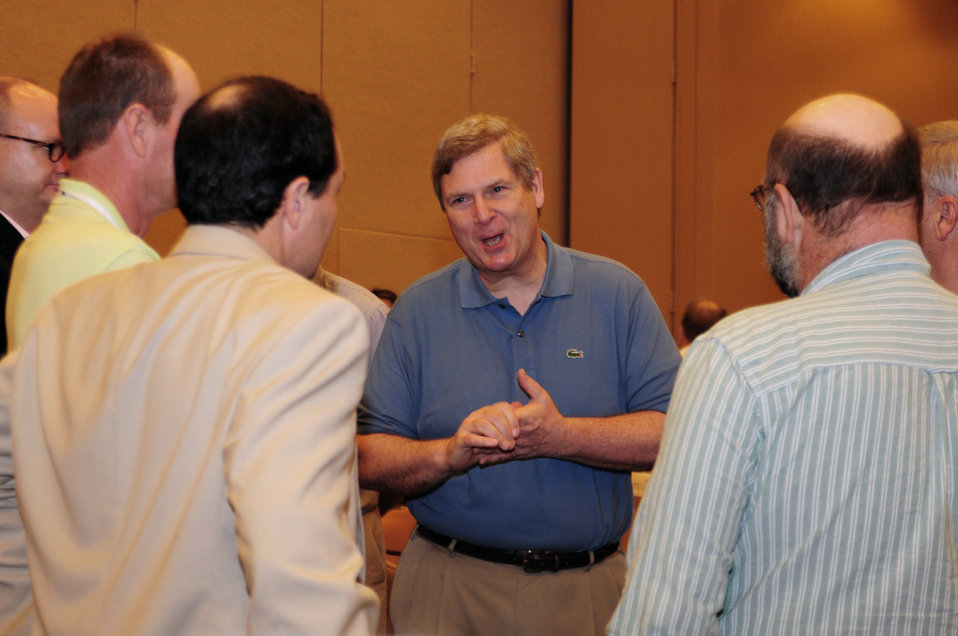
Iowa State Farm Bureau Federation Breakfast

Agriculture Secretary Tom Vilsack discusses issues with State Board Members and young farmers and ranchers at the Iowa Farm Bureau Breakfast at the Sheridan Waikiki, Hawaii, on Sunday, January 8, 2012.